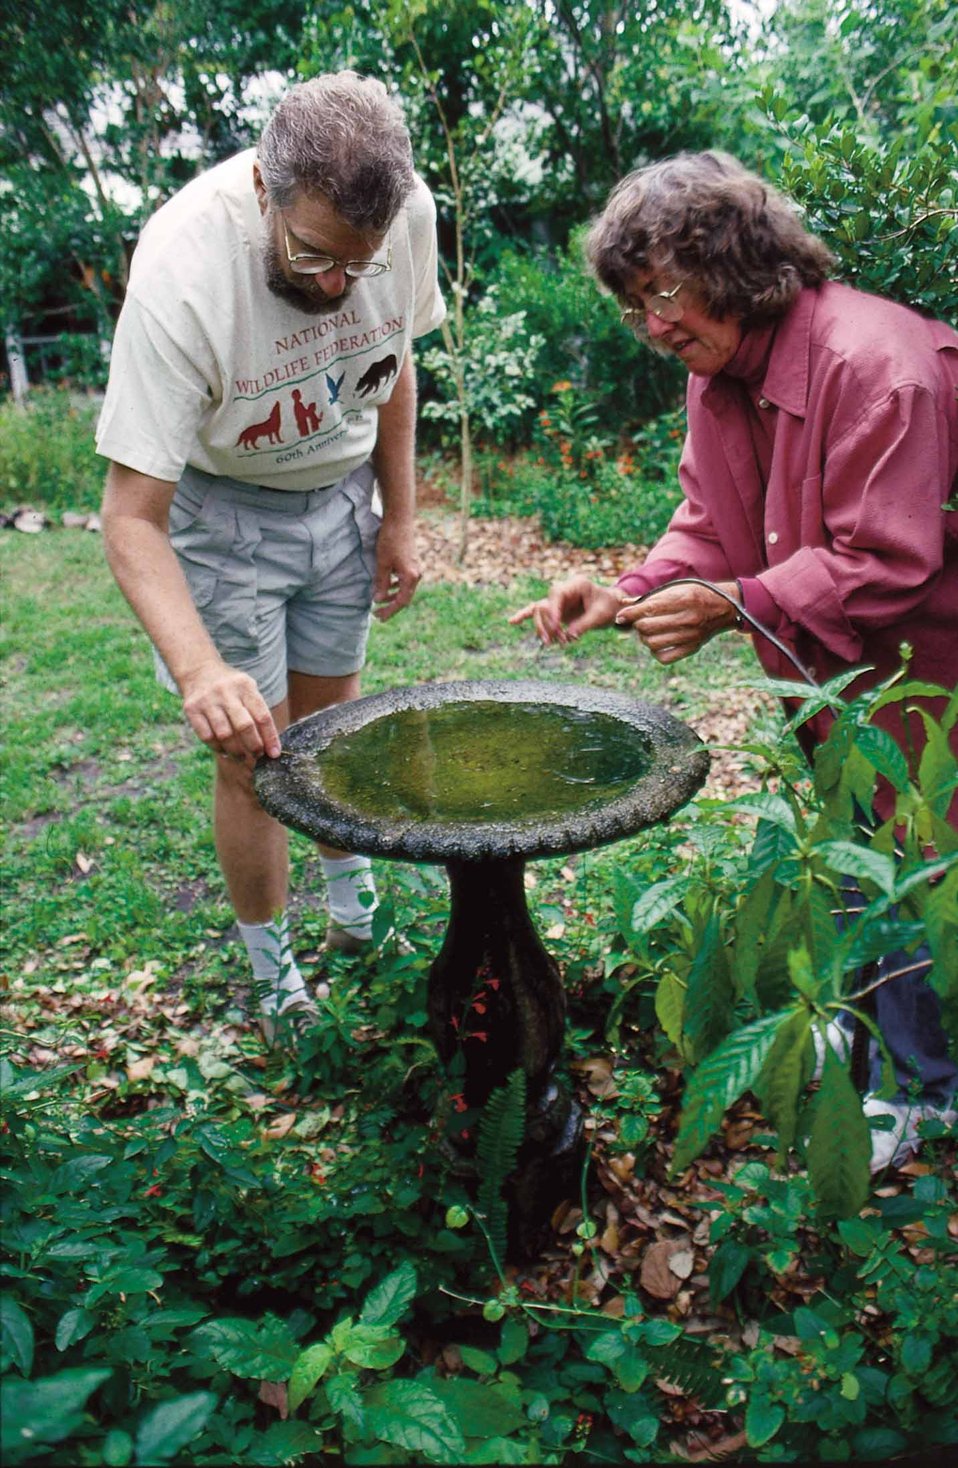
A birdbath may be the source of water in a backyard, such as this one in eastern Florida.